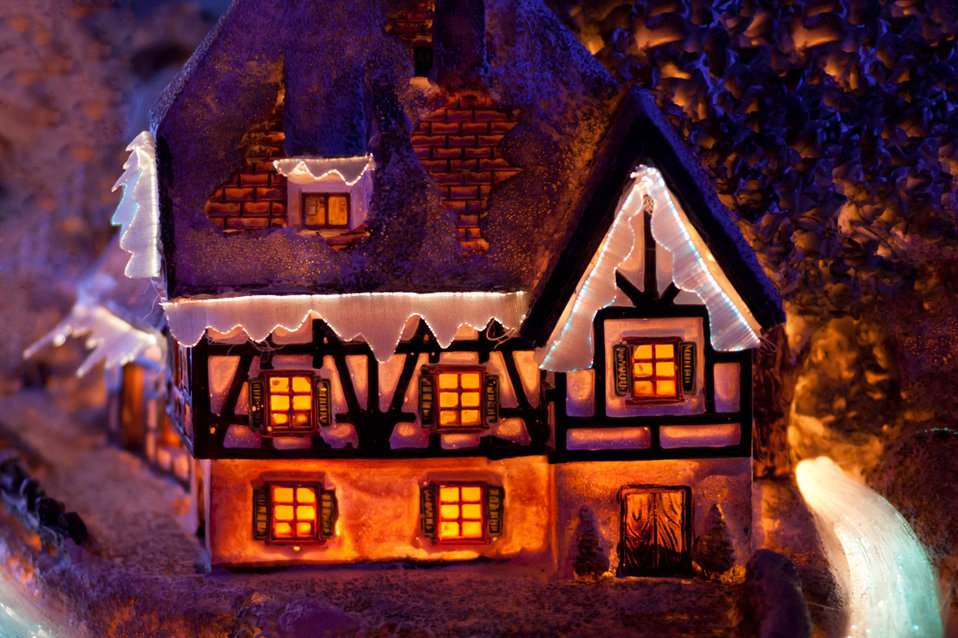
House in winter decoration.